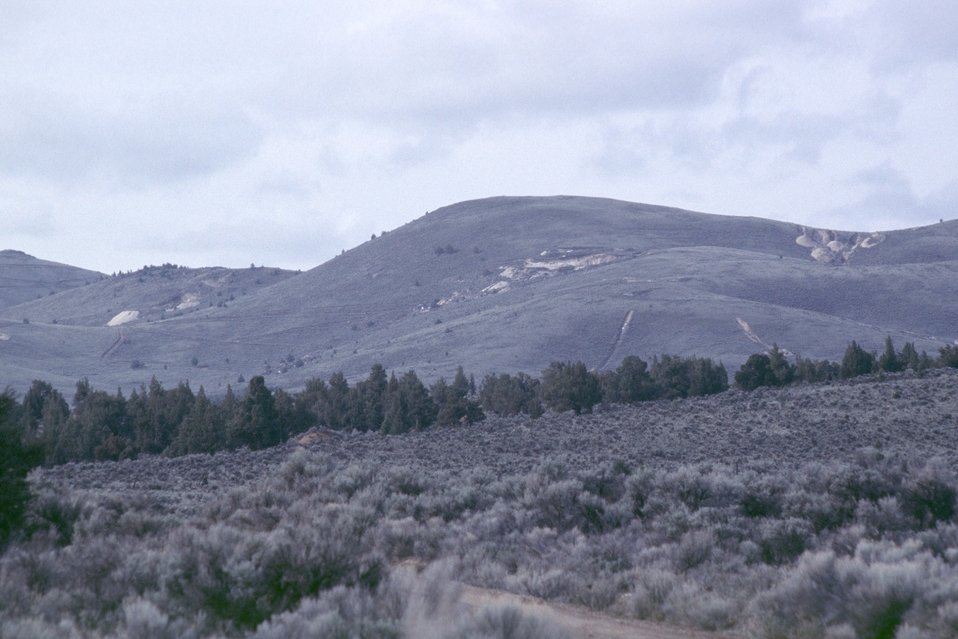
AML Glass Buttes, Burns District View of Glass Buttes from Highway 20, looking south. You can see dozer cuts from exploration and mining for mercury primarily in 1957 and 1967-1970.